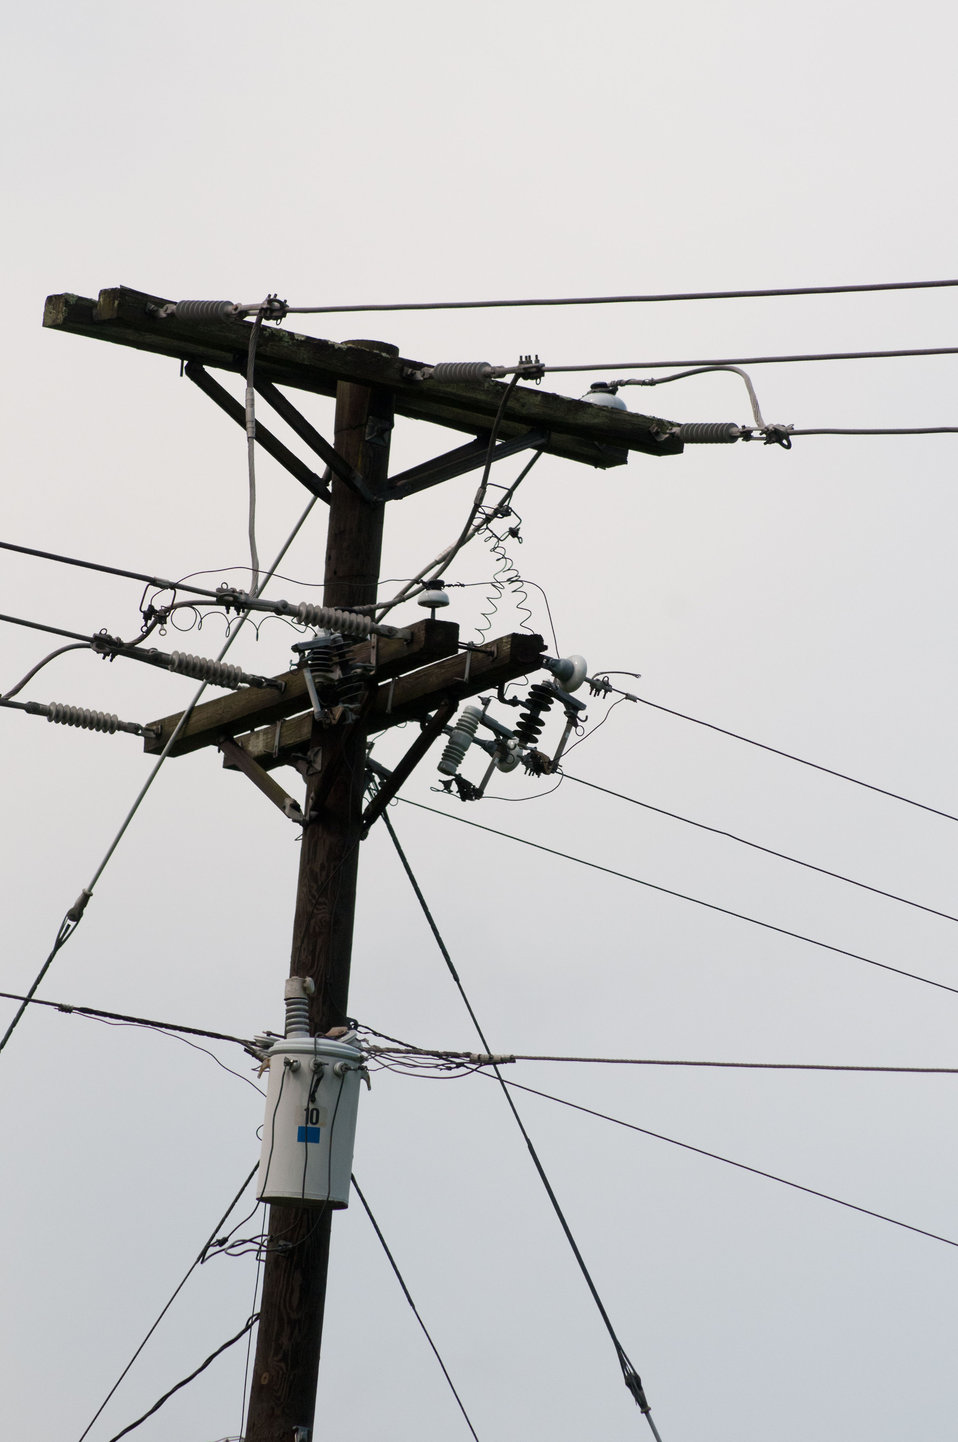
Power and communications lines between Lexington and Pikeville, KY, on Tuesday July 12, 2011. This is the Eastern Kentucky region of the Appalachian Mountains.